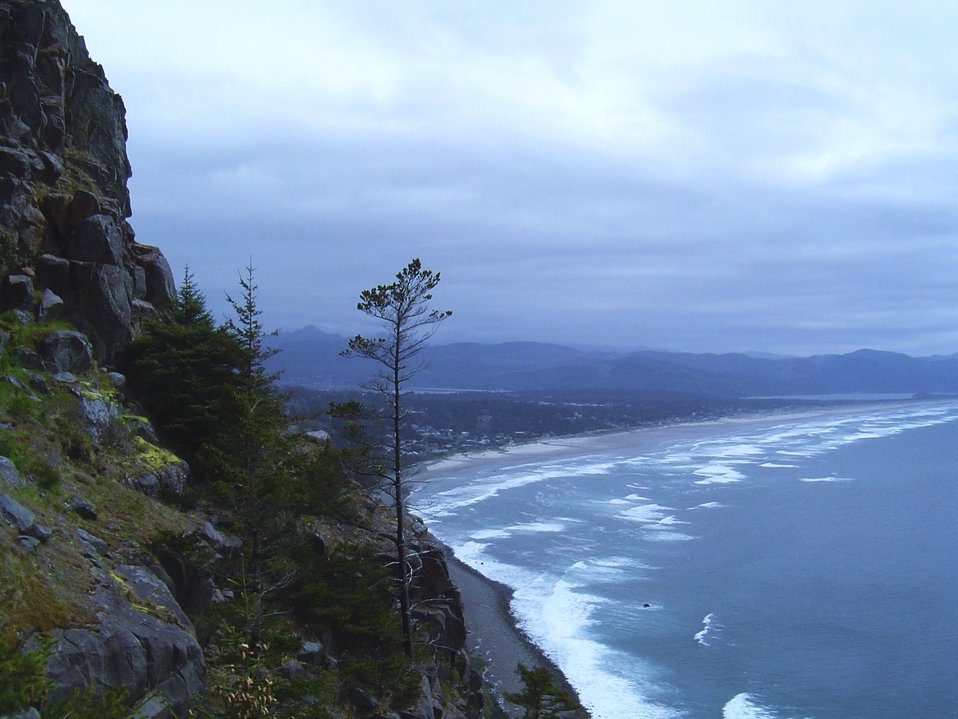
View of Manzanita